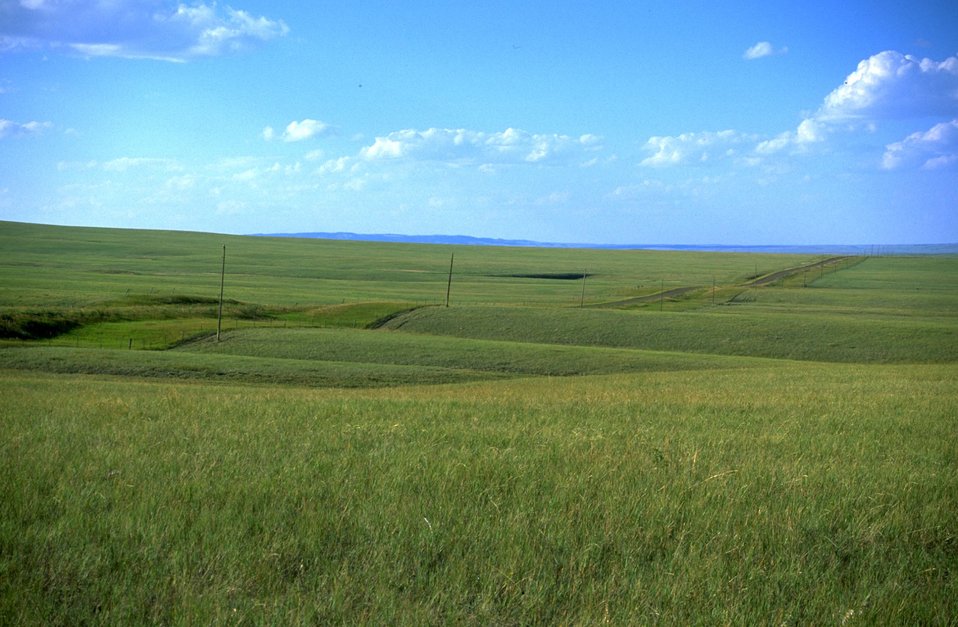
Powerline on grassland